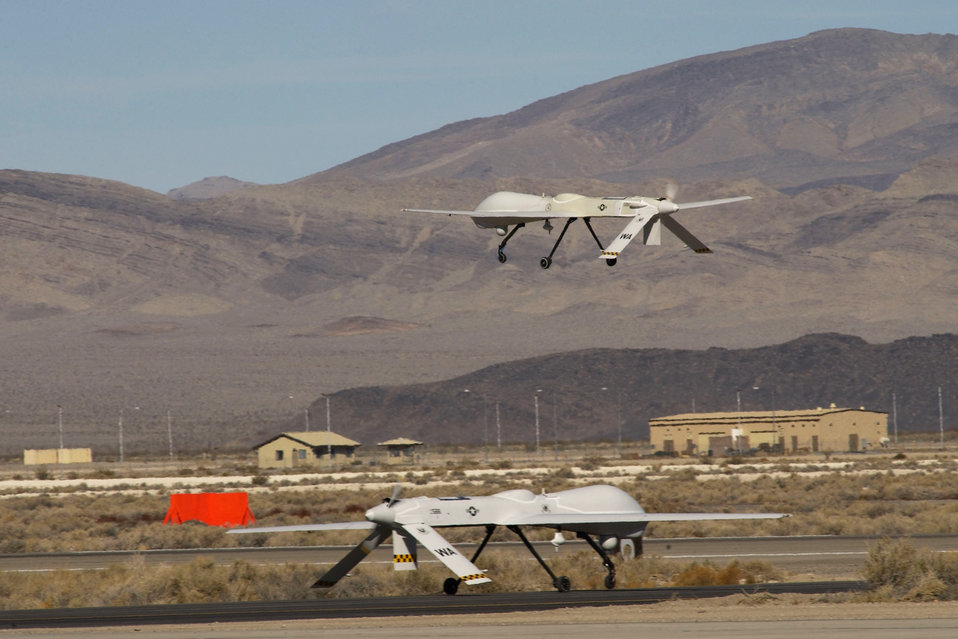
Predator combat air patrols double in one year

An MQ-1 Predator unmanned aerial vehicle makes a low approach while another waits for takeoff clearance at Creech Air Force Base, Nev. The 11th Reconnaissance Squadron at Creech AFB prepares pilots, sensor operators and other specialists for worldwide intelligence, surveillance and reconnaissance missions worldwide. The Predator can carry two Hellfire air-to-surface missiles in addition to various cameras and synthetic-aperture radar.